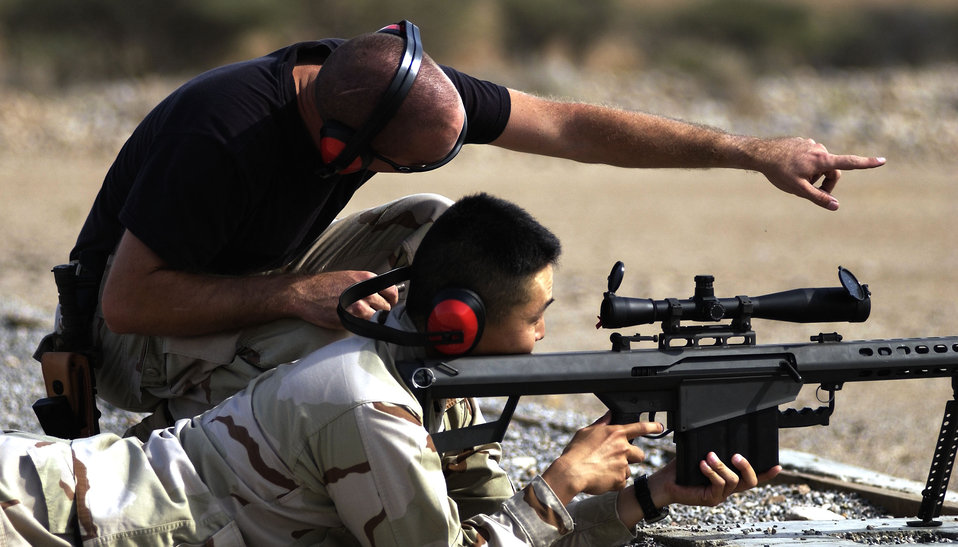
Staff Sgt. Cary Gibson explains aiming procedures

SOUTHWEST ASIA -- Staff Sgt. Cary Gibson (top) explains aiming procedures for the .50-caliber sniper rifle to 1st Lt. Hong Kim during an explosive ordnance disposal demonstration held at a deployed location in Southwest Asia on Nov. 27. Both airmen are from the 320th Expeditionary Civil Engineer Squadron. Gibson is assigned to the squadron's explosive ordnance disposal branch which uses sniper rifles to explode ordnance without getting close to it.